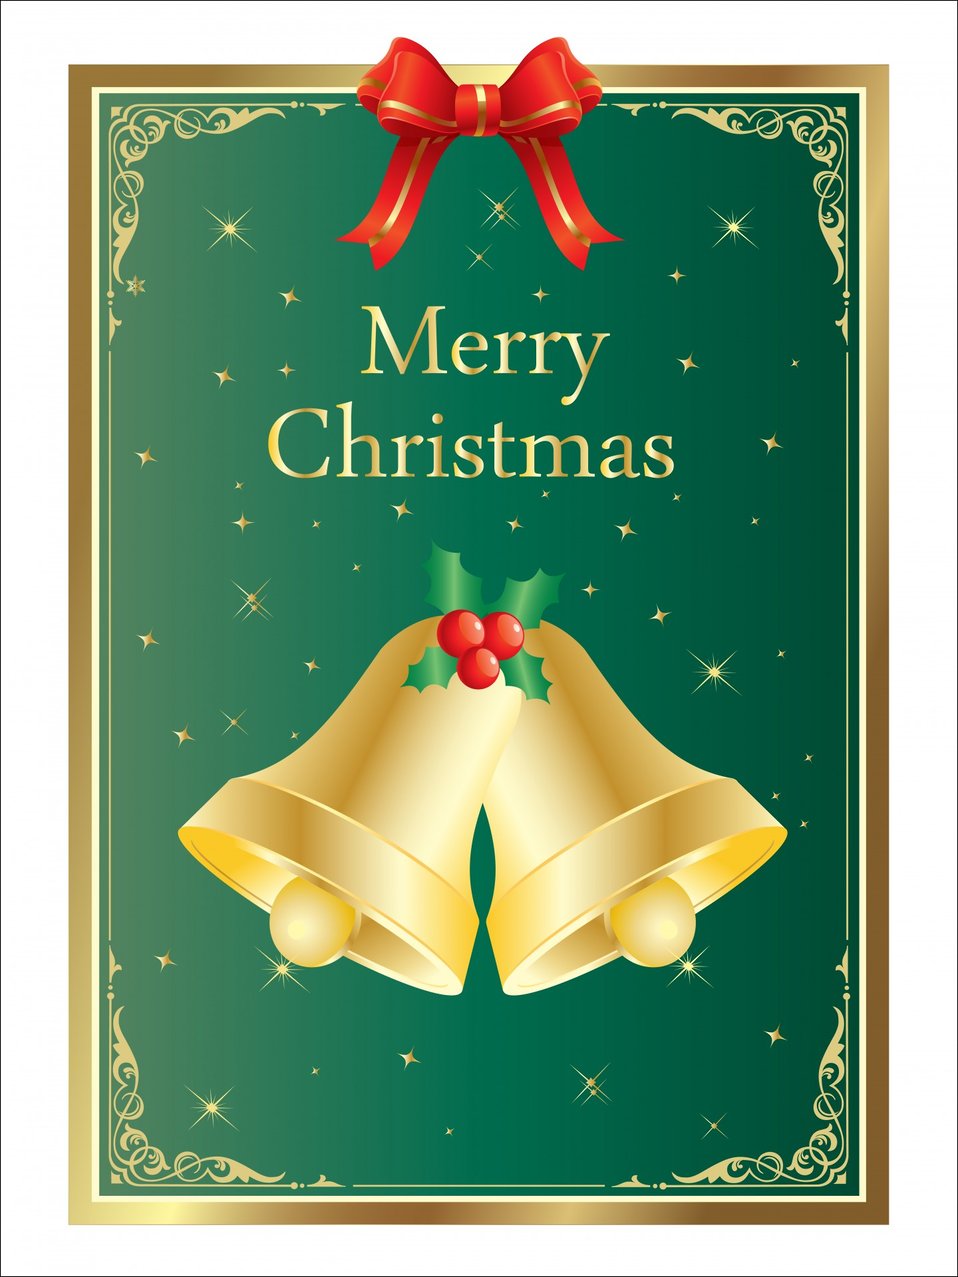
Christmas bells card template

Christmas bells and bow with stars and holly on green background card template.